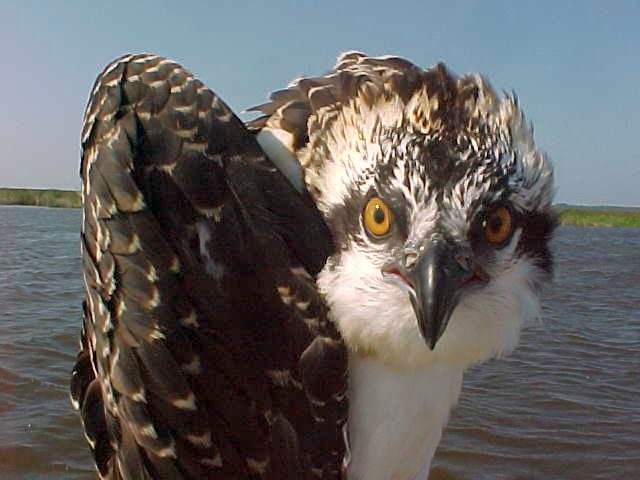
Osprey

Back Bay National Wildlife Refuge.